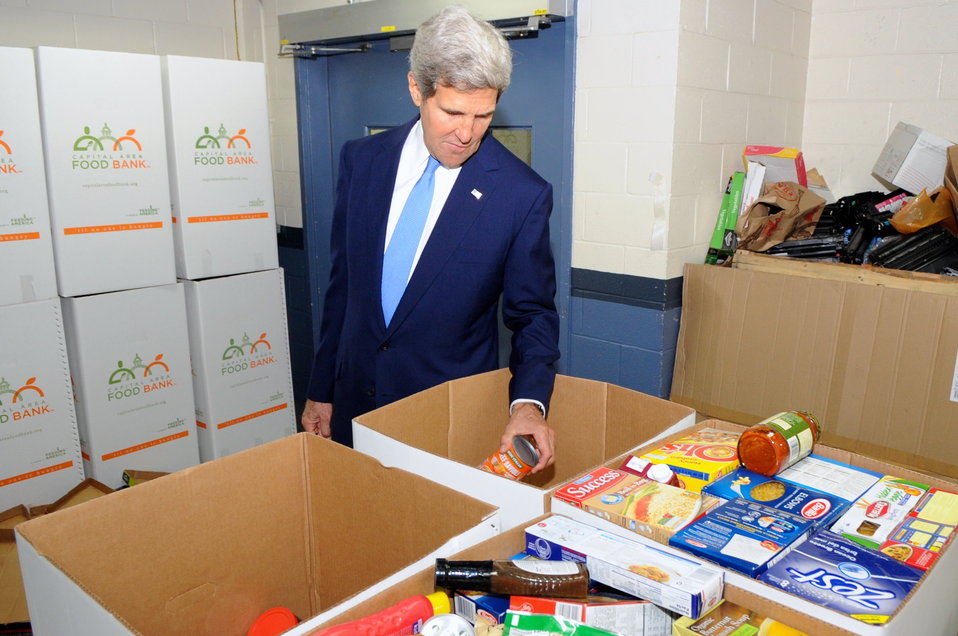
Secretary Kerry Makes a Donation to the Feds Feed Families Food Bank Drive

U.S. Secretary of State John Kerry makes a donation to the USDA Feds Feed Families food bank drive at the U.S. Department of State in Washington, DC on August 29, 2013.